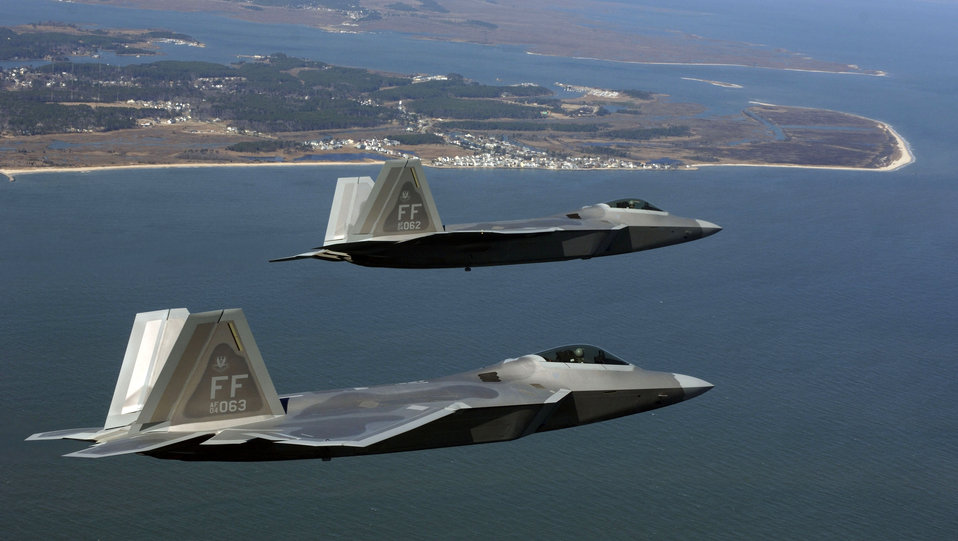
94th Raptors

Lt. Col. Dirk Smith and Maj. Kevin Dolata move into the Langley Air Force Base pattern Friday, March 3, 2006 to deliver the first F-22A Raptors assigned to the 94th Fighter Squadron. The 94th is the second squadron at Langley to receive the new stealth fighter. Colonel Smith is the squadron commander. Major Dolata is the squadron's assistant director of operations.